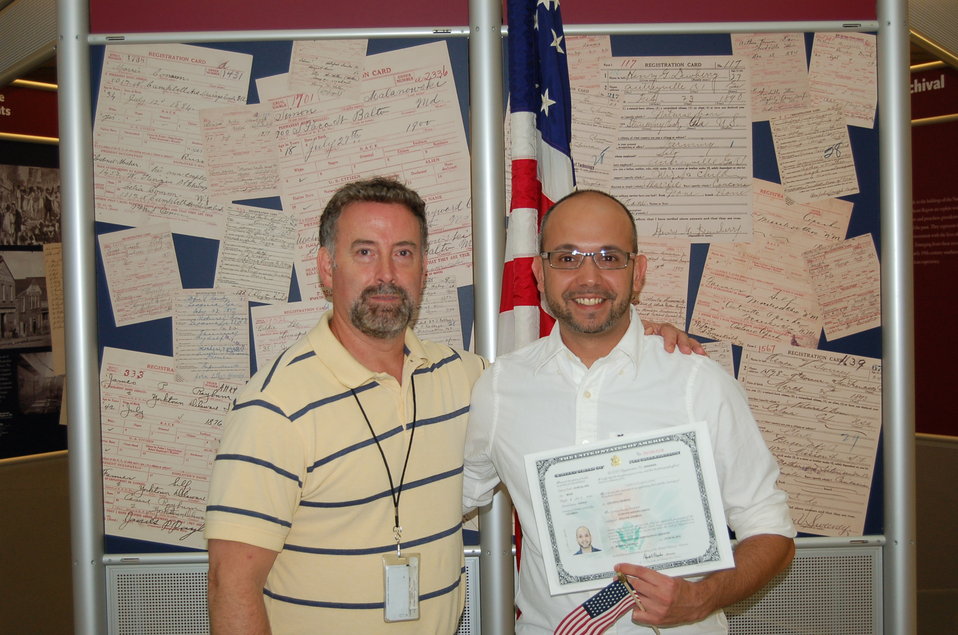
New Citizens